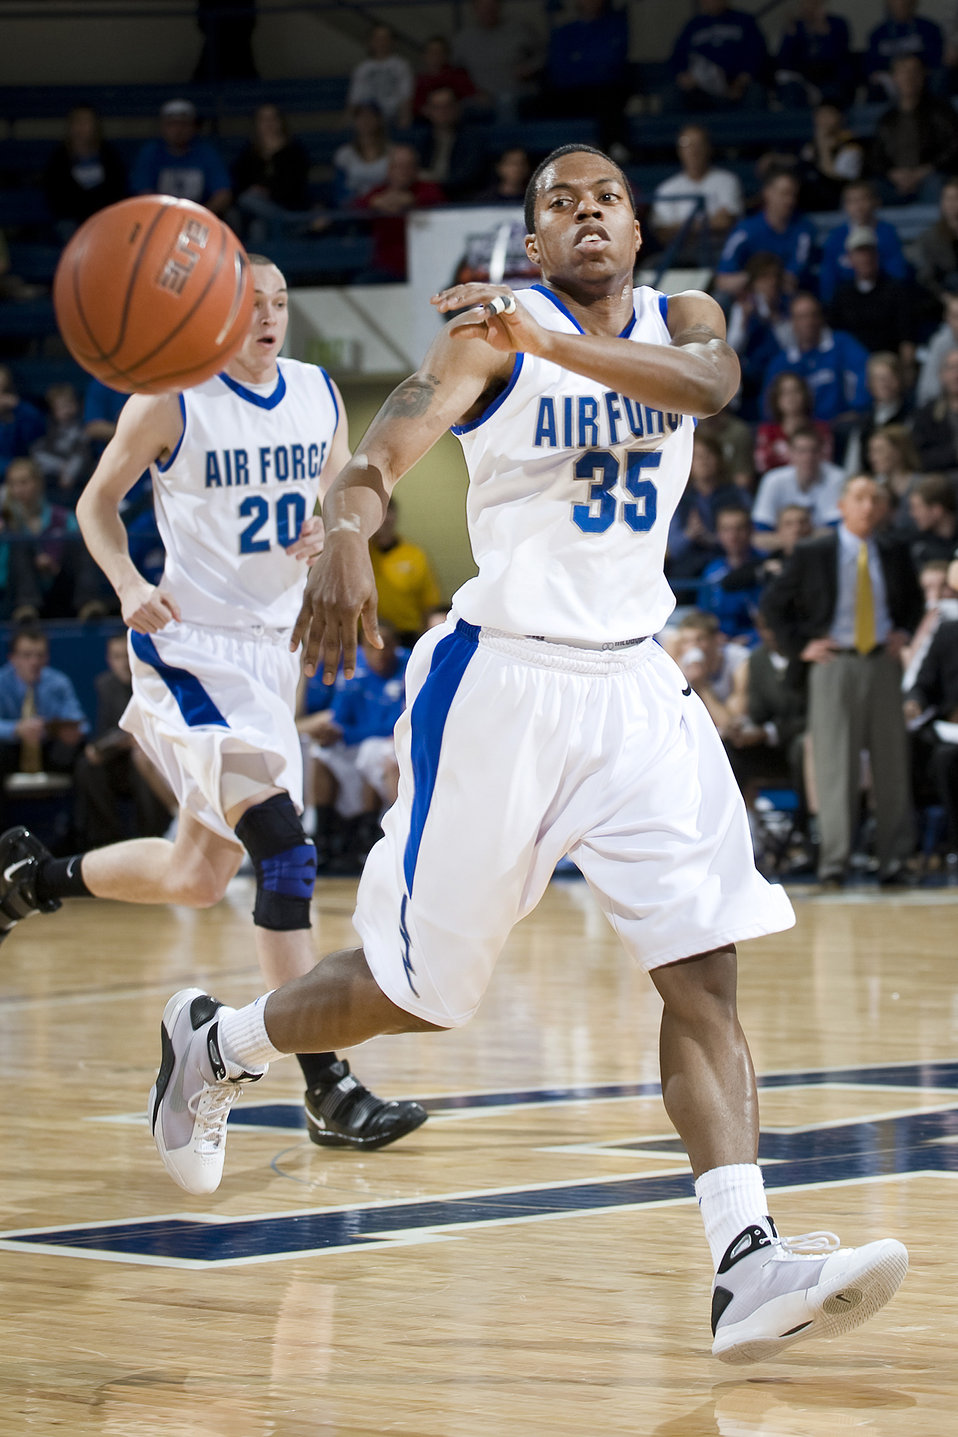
Horned Frogs surpass Falcons

Academy junior guard Evan Washington pushes the ball up court as the Falcons go against Texas Christian University Feb. 6, 2010, at the Academy's Clune Arena. The Falcons fell short of their goal, losing to TCU by a score of 65-51.